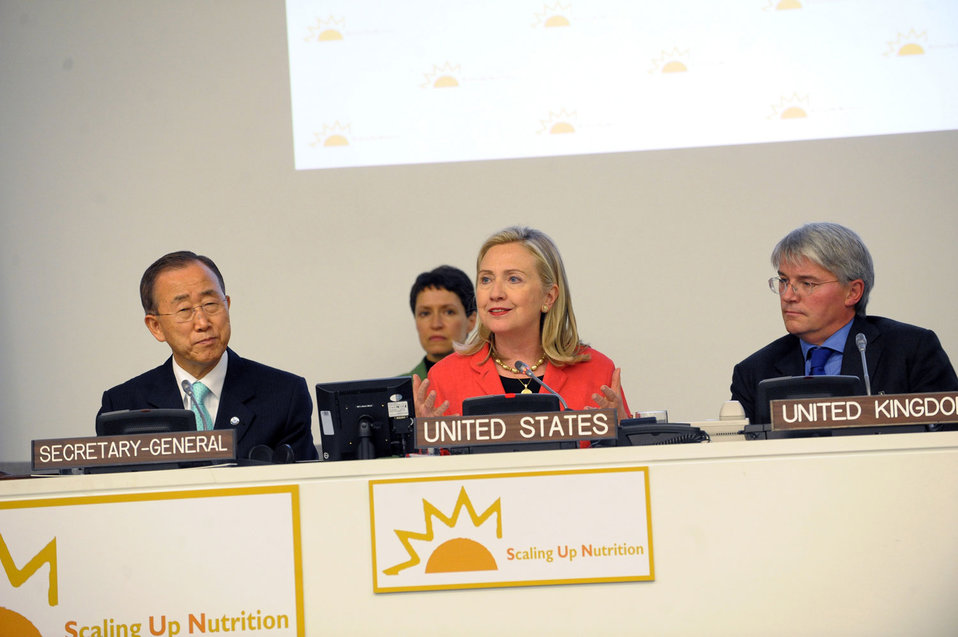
Secretary Clinton Participates in the UN High-Level Meeting on Nutrition

U.S. Secretary of State Hillary Rodham Clinton participates in the UN High-Level Meeting on Nutrition at the United Nations in New York, New York, on September 20, 2011.